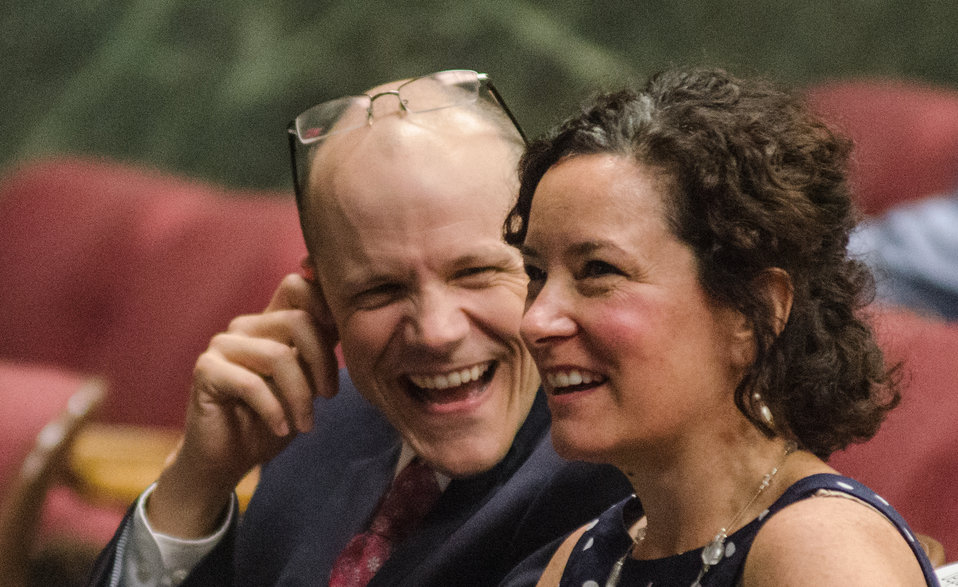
U.S. Department of Agriculture (USDA) Rural Development’s (RD) Acting Under Secretary Doug O'Brien and RD Deputy Under Secretary Patrice Kunech, during a humerous moment of the RD 2nd Annual Cultural Transformation kickoff opening ceremony and forums, themed “Employees Influencing Change,” on Tuesday, Aug. 13, 2013 at USDA in Washington, D.C.